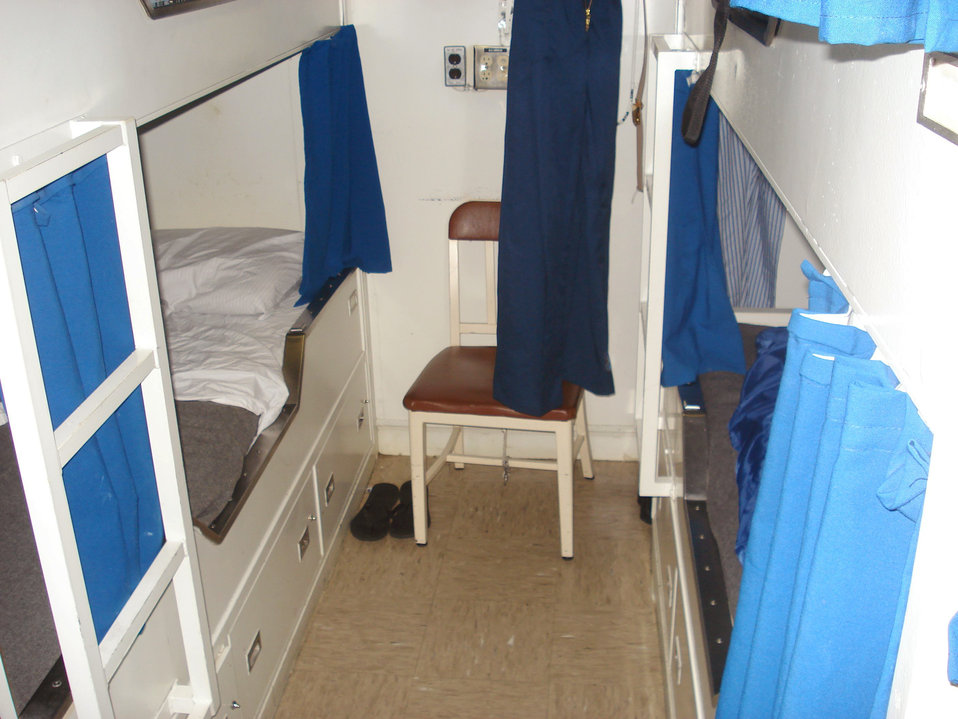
This image depicts the tight spaces inside a 4-man cabin in the officer's berthing on the USS Kearsarge (LHD 3), which is an amphibious assault ship that was supporting the Caribbean phase of operation Continuing Promise 2008, an equal-partnership mission between the United States, Canada, the Netherlands, Brazil, Nicaragua, Panama, Colombia, Dominican Republic, Trinidad and Tobago and Guyana.